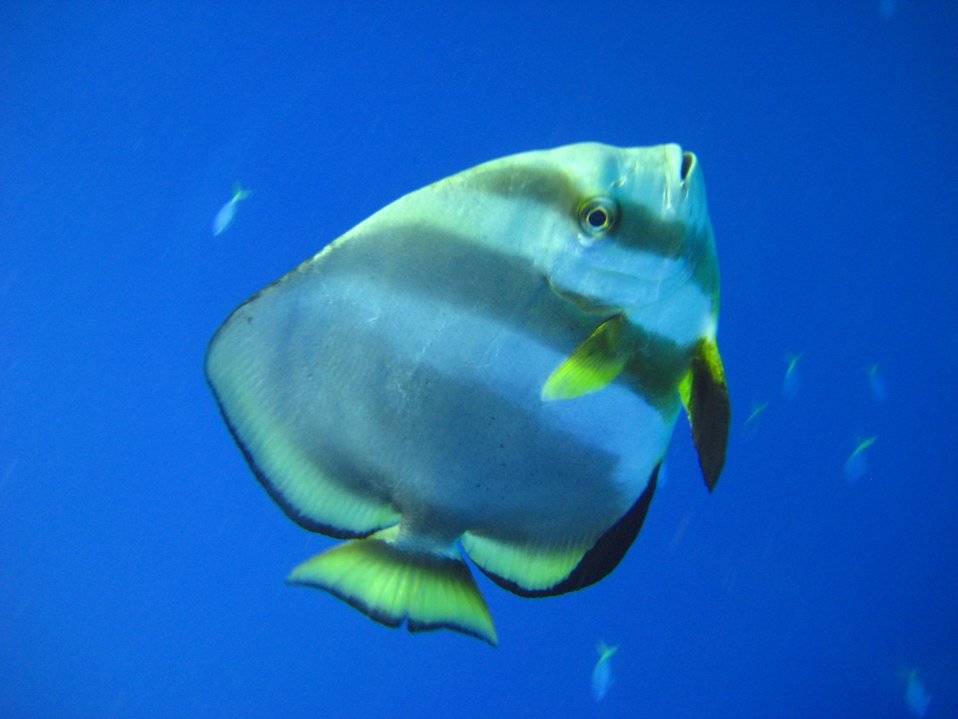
Longfin batfish (Platax pinnatus)